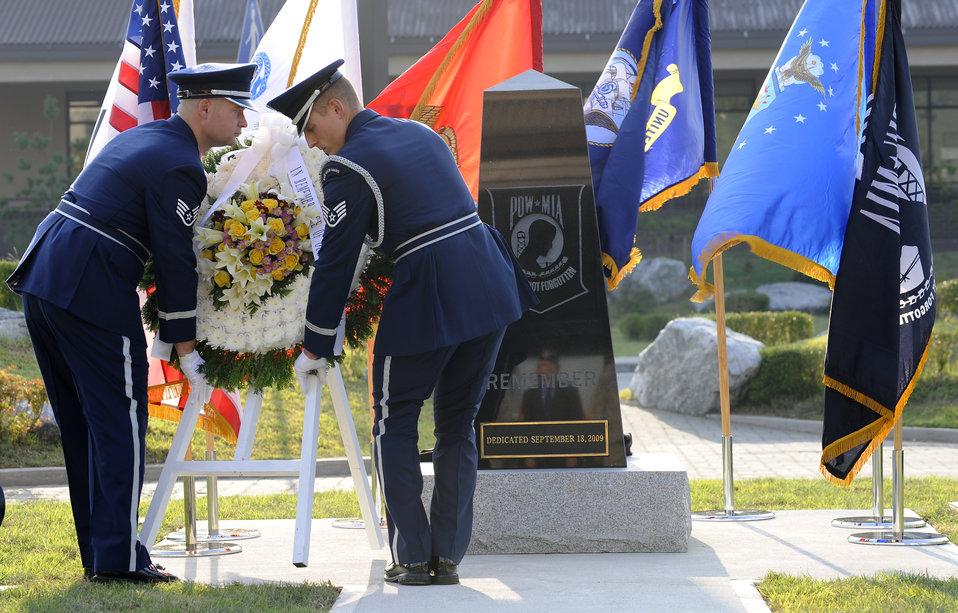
Osan officials dedicate POW/MIA memorial

Osan Air Base honor guard Airmen lay a wreath in front of a POW/MIA remembrance statue during a dedication ceremony in front of the base theater Sept. 18, 2009, at Osan Air Base, South Korea.